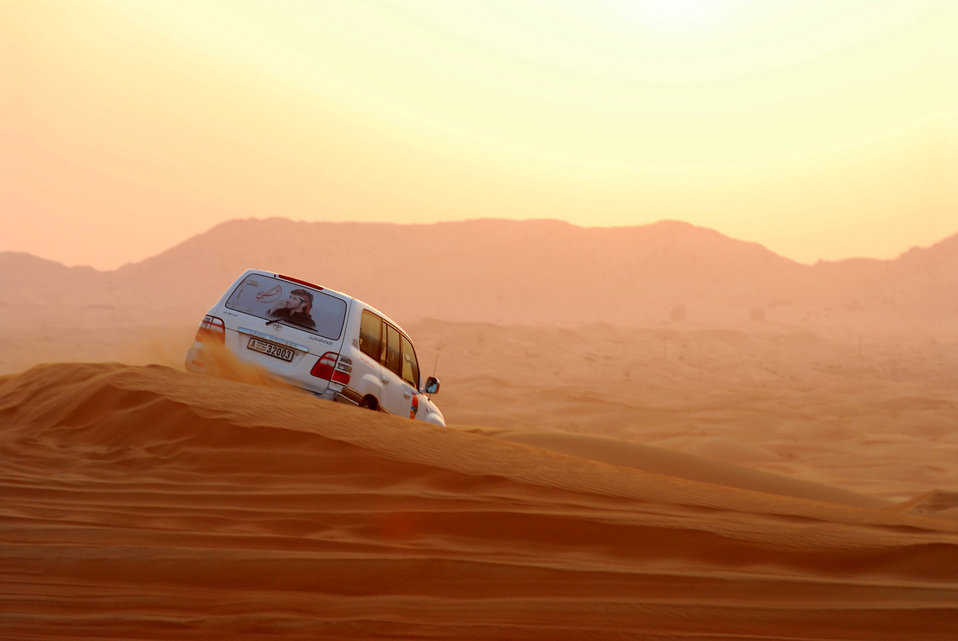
Desert safari at dubai.